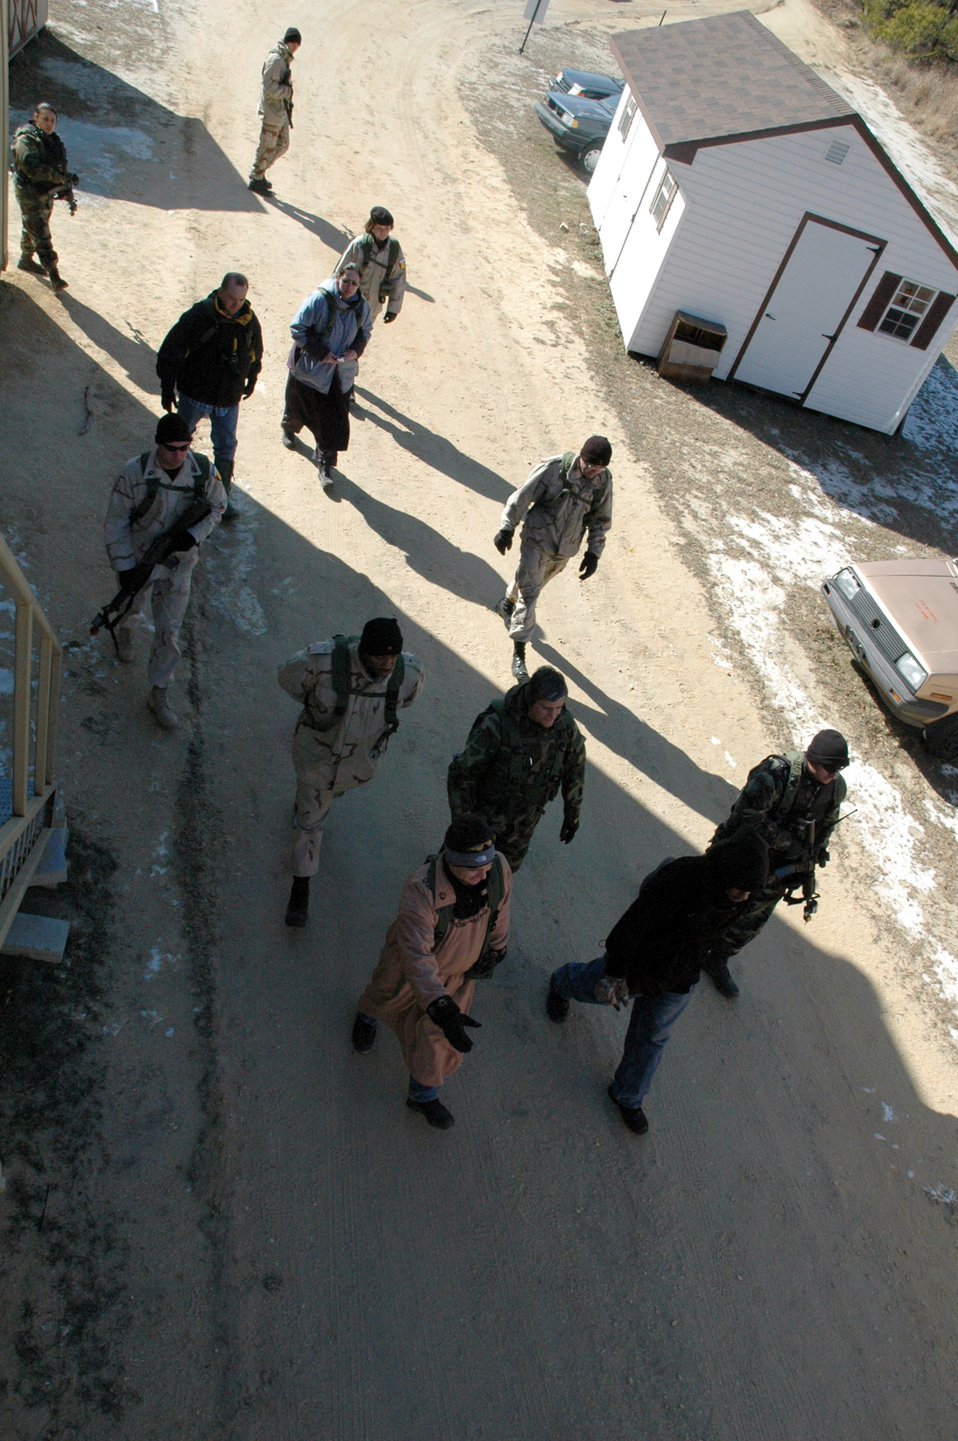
Eagle Flag